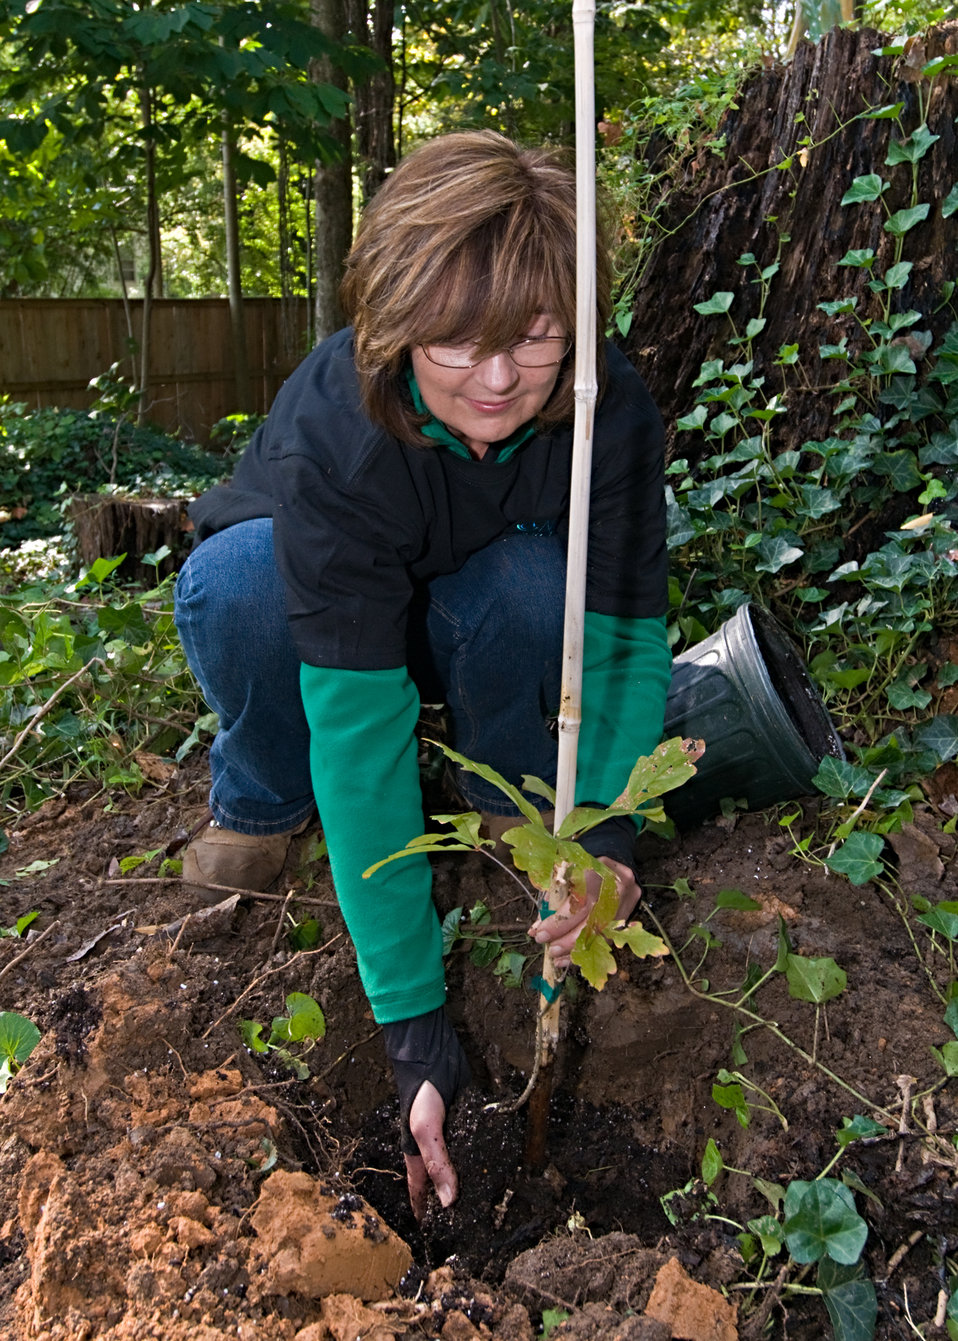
Andree Duvarney, Special Assistant to the Chief, Natural Resources Conservation Service plants a progeny of one of the original white oaks at “Eight Oaks” the home of Dr. Hugh Hammond Bennett the first Chief of the Natural Resources Conservation Service then the Soil Erosion Service at Dr. Bennett’s home in McLean, Virginia on Friday, October 15, 2010 as part of the celebration for the 75th Anniversary of the Natural Resources Conservation Service. USDA Photo 10di1523-40 by Bob Nichols.